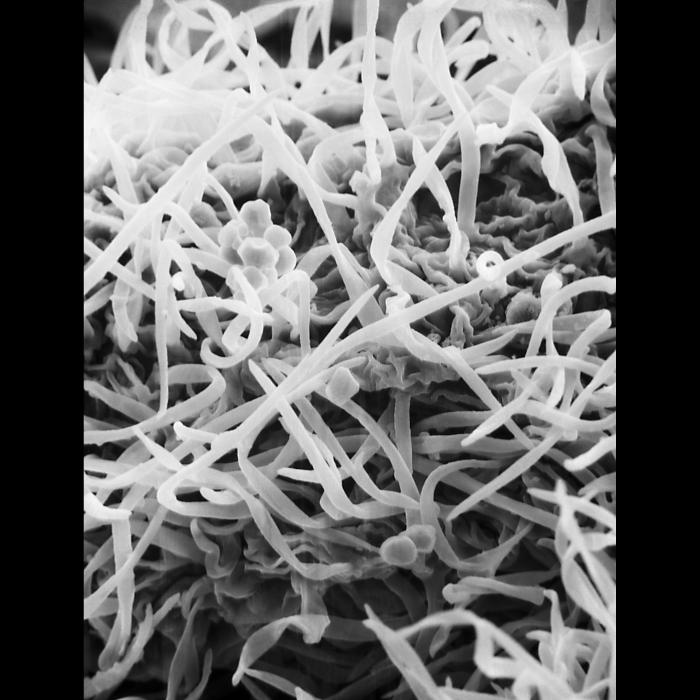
This scanning electron micrograph (SEM) revealed the ultrastructural details found on the surface of a red raspberry drupelet.